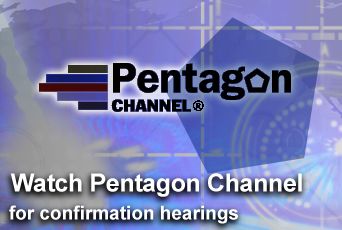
SAC confirmation hearings

The Senate Armed Services Committee confirmation hearings for the secretary of the Air Force, the chief of staff of the Air Force and the commander of U.S. Transportation Command are being streamed live on The Pentagon Channel.